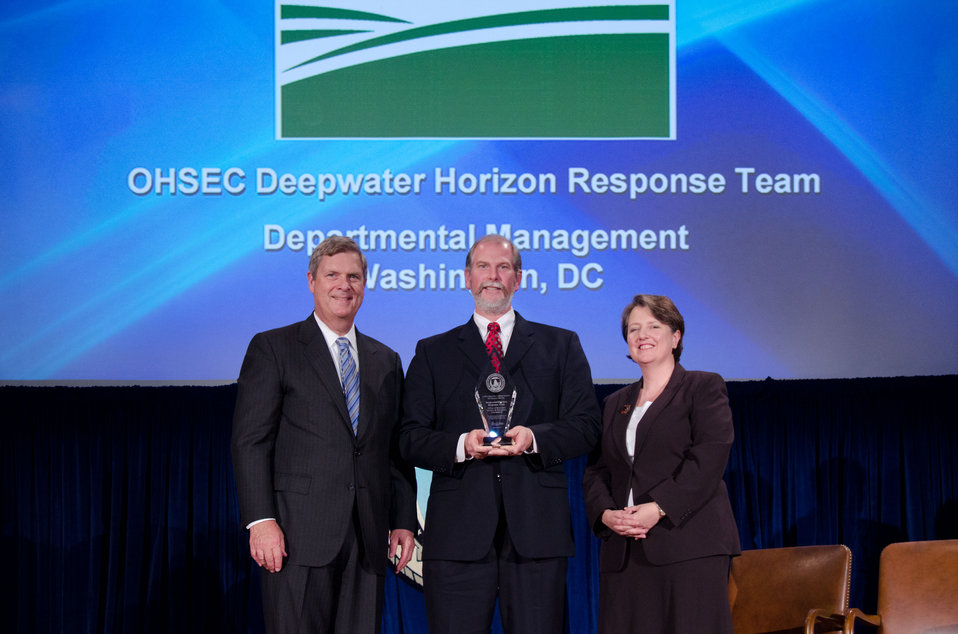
Agriculture Secretary Tom Vilsack (l) and Deputy Secretary Kathleen Merrigan (r), presents the Award to OHSEC Deepwater Horizon Response Team, Departmental Management, Washington, DC. Todd Repass, Group leader. Fr leadership in coordinating USDA support to the national response to the Deepwater Horizon oil spills. On Wednesday, September 14, 2011 in the Jefferson Auditorium at the US Department of Agriculture in Washington, DC.